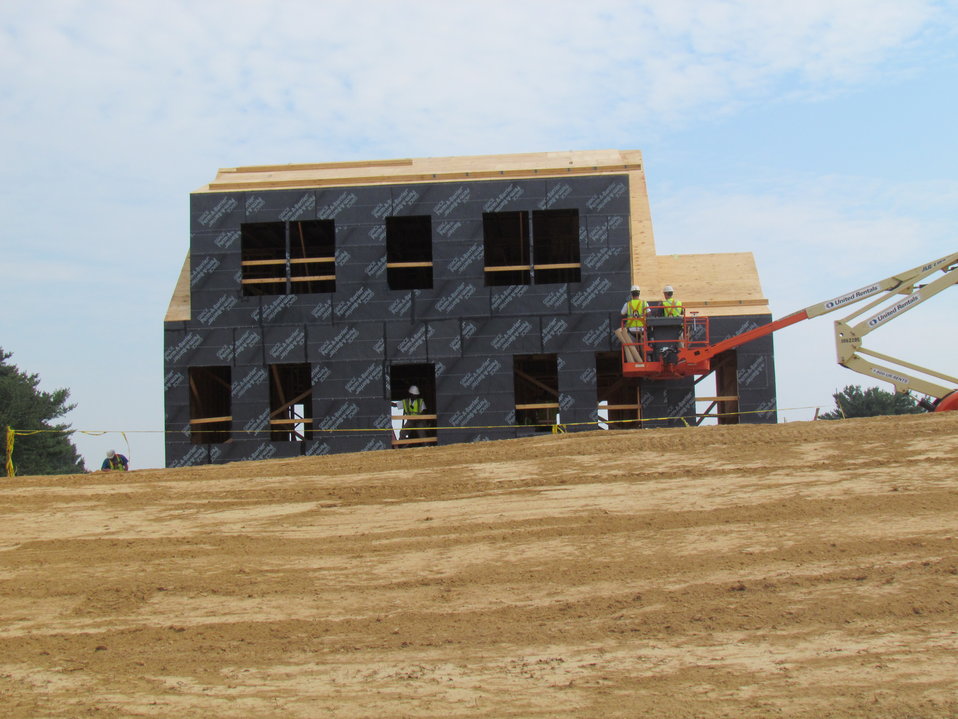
Net-Zero Energy Residential Test Facility - Photo showing air/moisture barrier installed on front (south side) of facility.